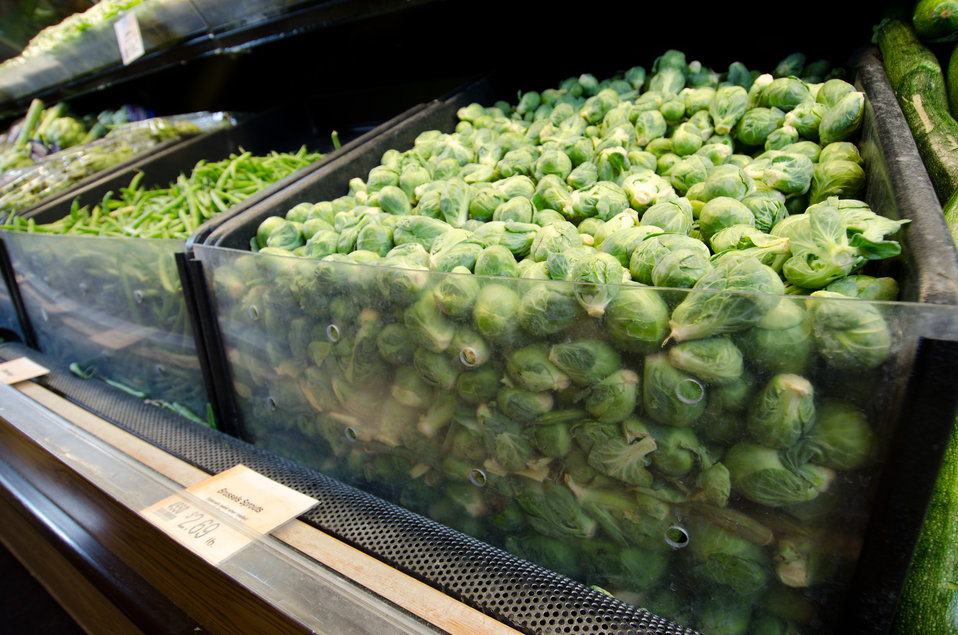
Brussel sprouts and other produce at a grocery store in Fairfax, Virginia, on March 3, 2011.